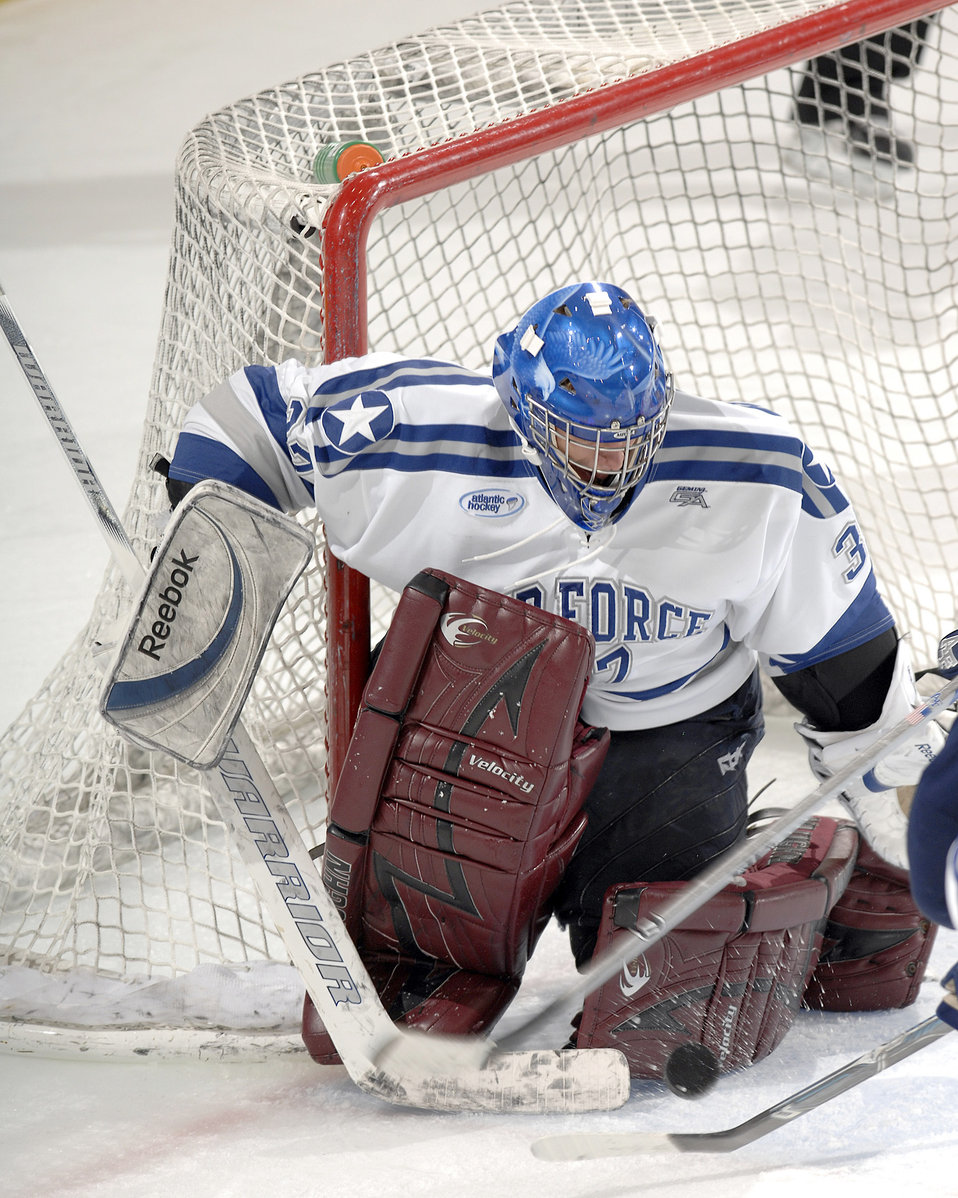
Falcons defeat the Pronghorns

Air Force Academy sophomore Stephen Caple deflects a shot during a hockey exhibition game against the Canadian University of Lethbridge Oct. 4, 2010, at the Academy's Cadet Ice Arena in Colorado Springs, Colo. Caple made seven saves while allowing three goals as the Falcons defeated the Pronghorns 4-3 in overtime.